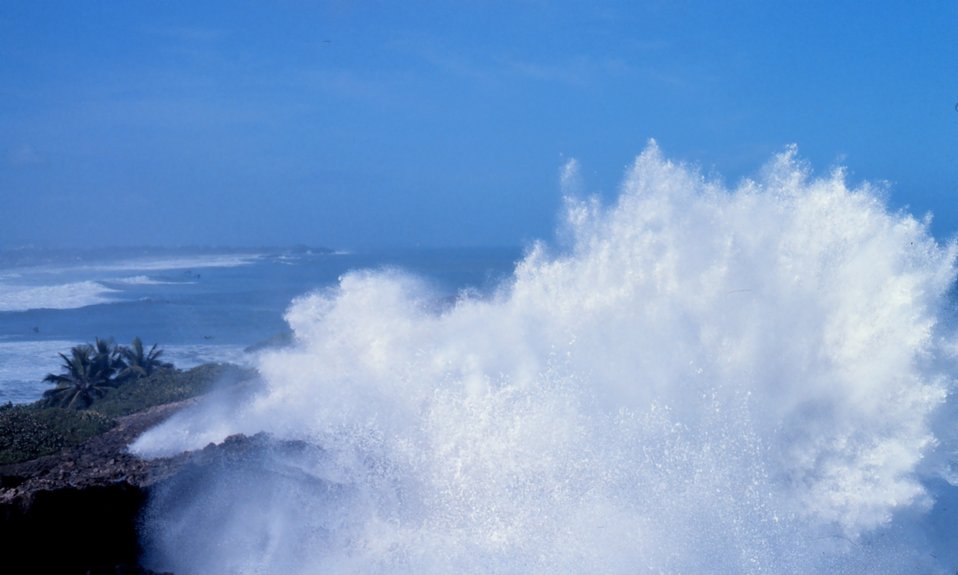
Hurricane surf on the north coast of Puerto Rico. Note palm trees for scale.